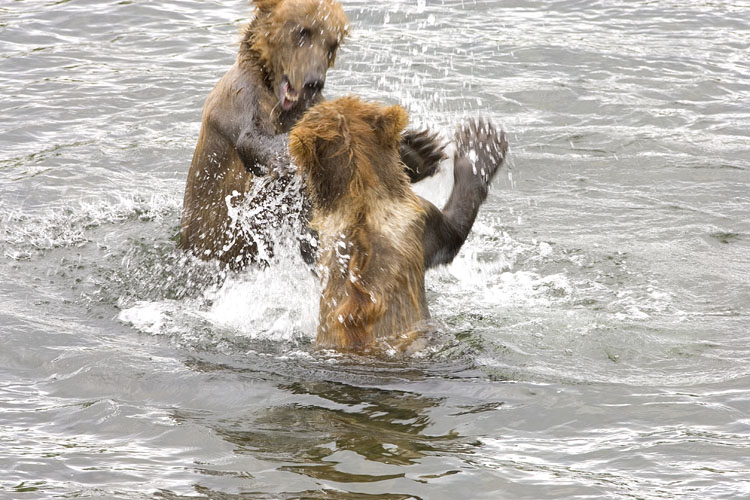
KOD Hildebrand (15)

Kodiak National Wildlife Refuge- Wildlife